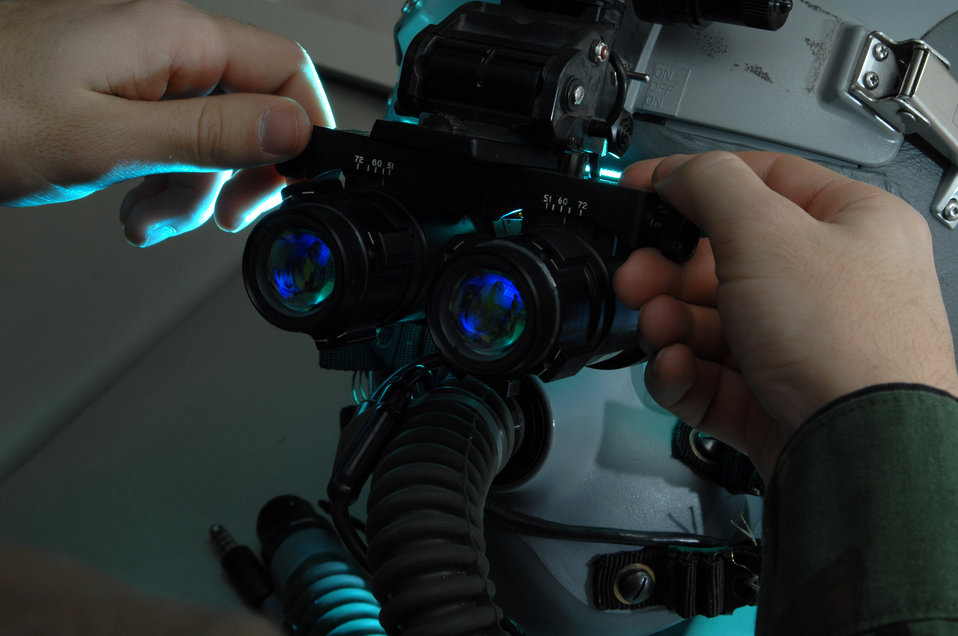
Seeing in the dark

Airman 1st Class Andrew Witherspoon adjusts the eyespan on a pair of night vision goggles Nov. 29 in the life support section of the 355th Fighter Squadron at Eielson Air Force Base, Alaska.